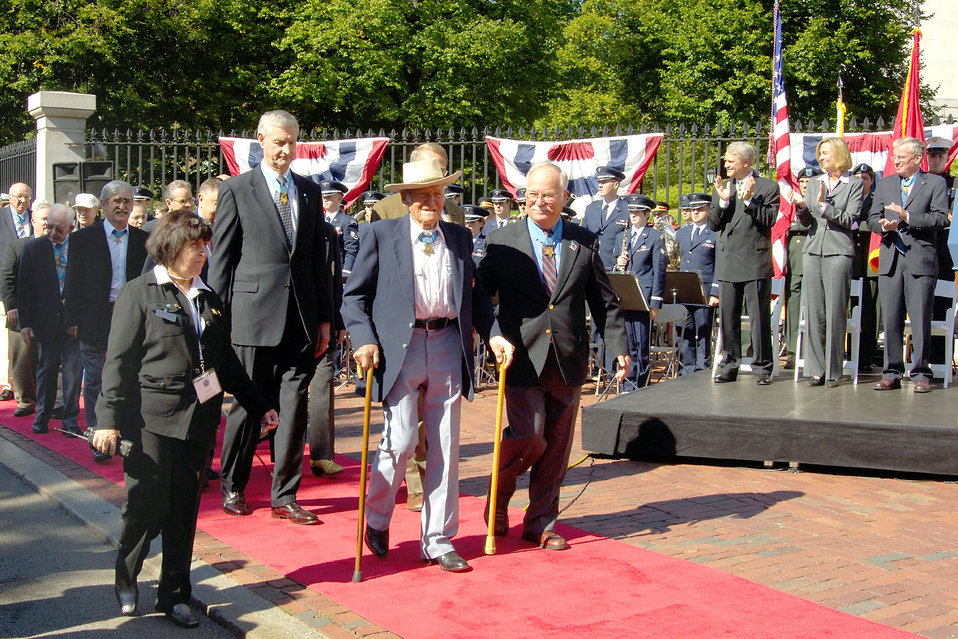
Medal of Honor recipients honored in Boston

More than 70 Medal of Honor recipients in Boston for an annual convention, attended a special ceremony at the State House on Sept. 27. The ceremony was attended by state leaders and active-duty servicemembers and ROTC cadets of all branches of military service. The Air Force Band of Liberty from Hanscom Air Force Base provided the music accompaniment for the ceremony.